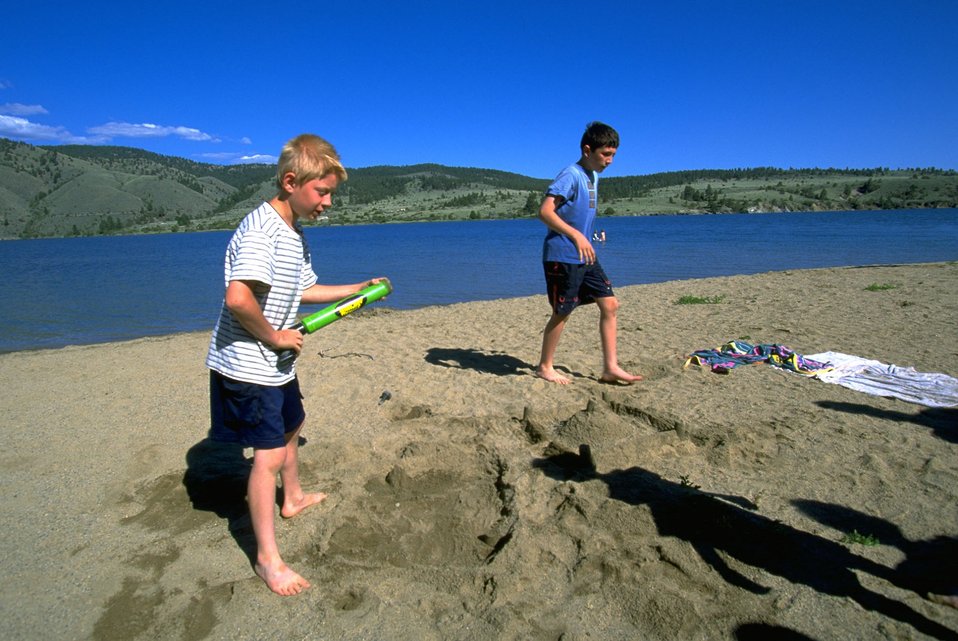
Boys playing on the sandy beach at Hauser Lake